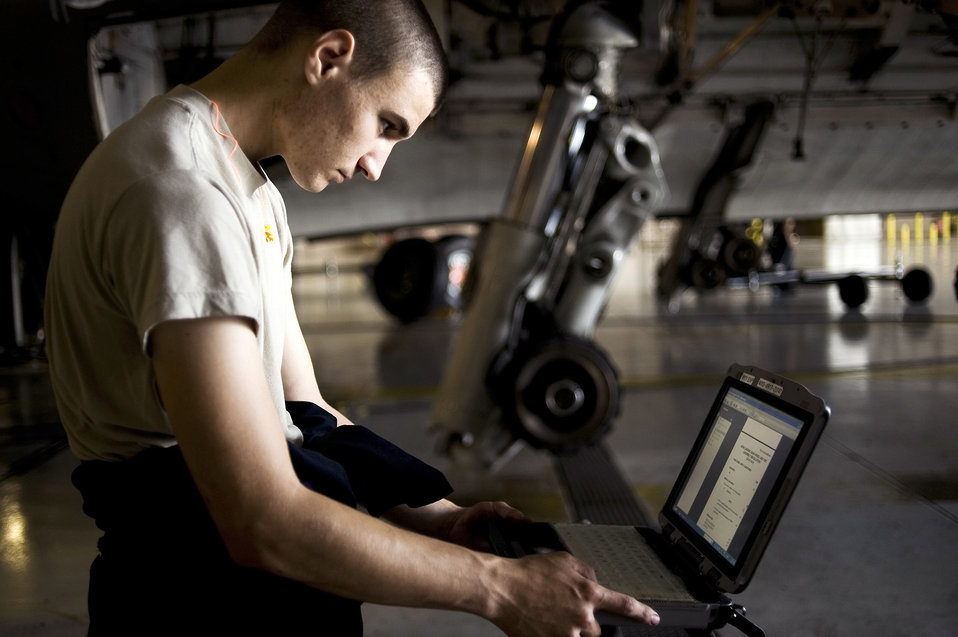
Maintenance Airmen keep C-17 wheels turning

Airman Andrew Boomershine reviews technical orders Aug. 5, 2010, at Joint Base Lewis-McChord, Wash. Airmen Boomershine is a crew chief with the 62nd Maintenance Squadron and is responsible for ensuring McChord's fleet of C-17 Globemaster IIIs meet all requirements and guidelines ensuring safety of the aircraft and crew.